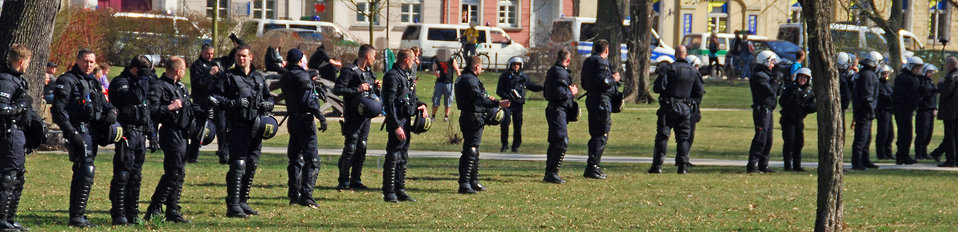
Proteste gegen den Nazi-Aufmarsch am 24.3.2012 in Frankfurt (Oder)